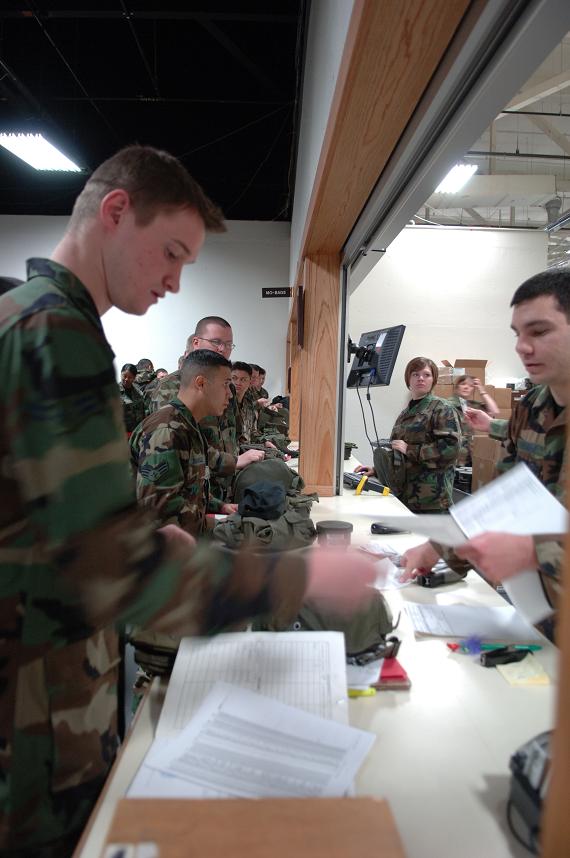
deployment to Southwest Asia from Ellsworth

Members of the 28th Bomb Wing, participate in a personnel deployment function (PDF) line prior to their upcoming deployment to Southwest Asia from Ellsworth Air Force Base, South Dakota, January 24, 2007. The 28th Bomb Wing is deploying troops to Southwest Asia in support of operations Iraqi Freedom and Enduring Freedom.